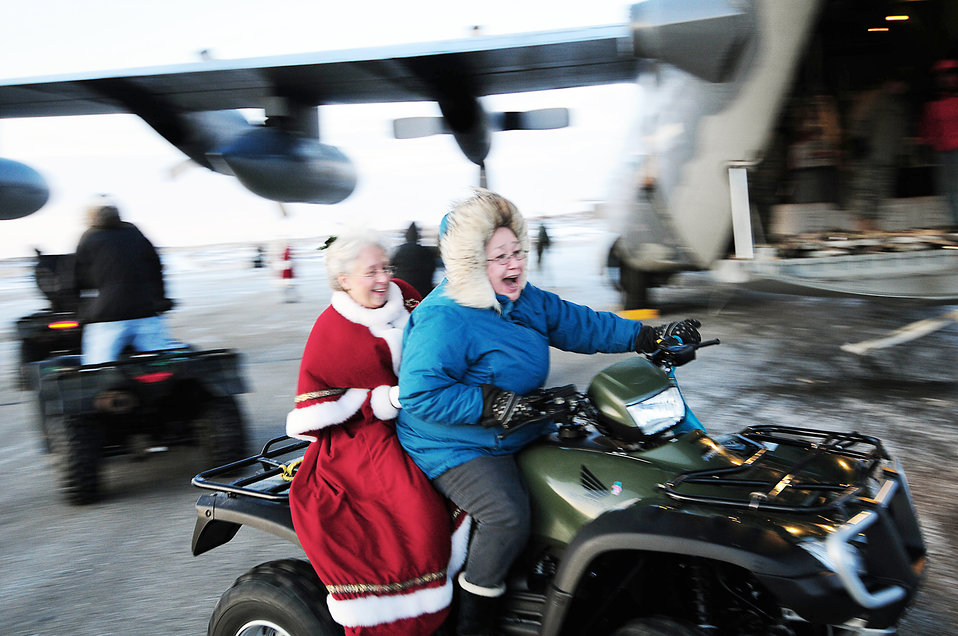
And Mrs. Santa, too

Gambell resident Betsy Katongan whisks Mrs. Santa past an Alaska Air National Guard HC-130 on their way to the Gambell Public School on St. Lawrence Island, Dec. 16, 2009. The Alaska Air and Army National Guard were on the remote island in the Bering Sea with civilian volunteers as part of Operation Santa Claus 2009.